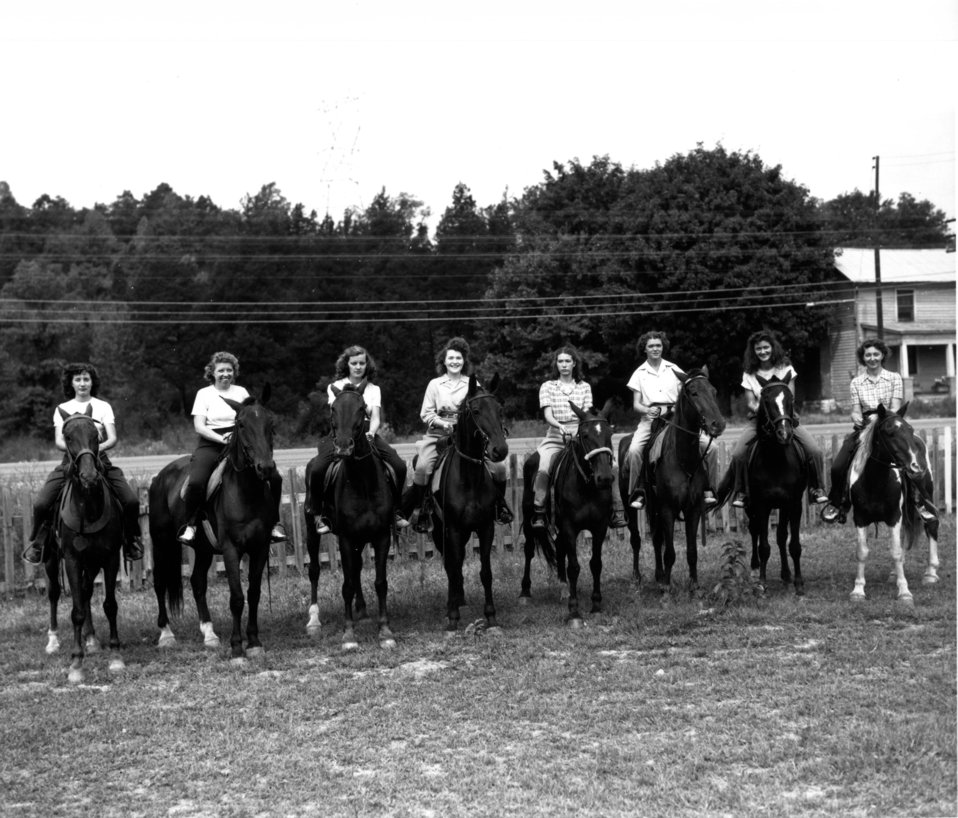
Recreation at Oak Ridge